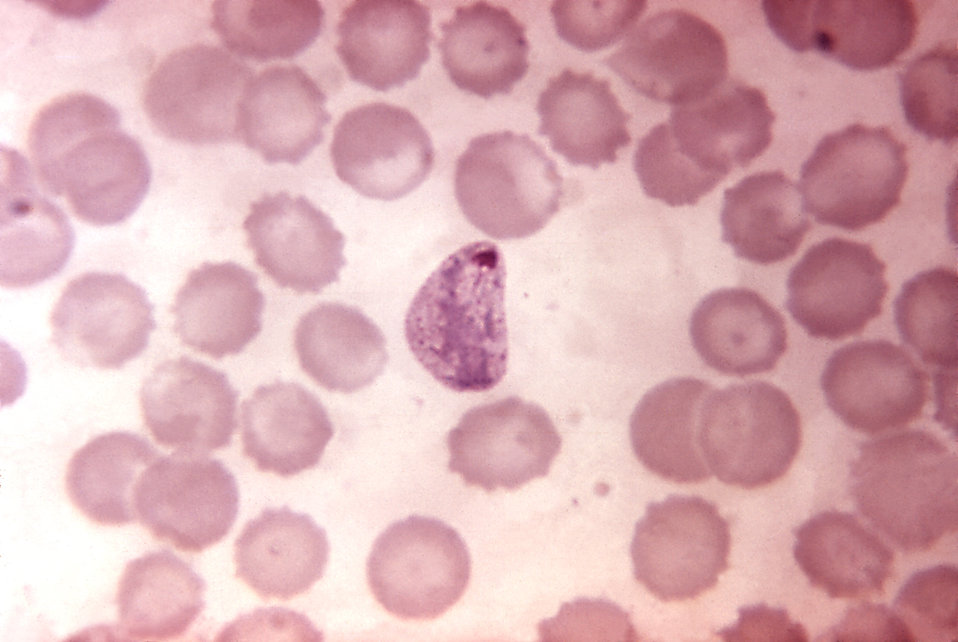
This micrograph depicts a compact, growing Plasmodium vivax trophozoite; Mag. 1250X.